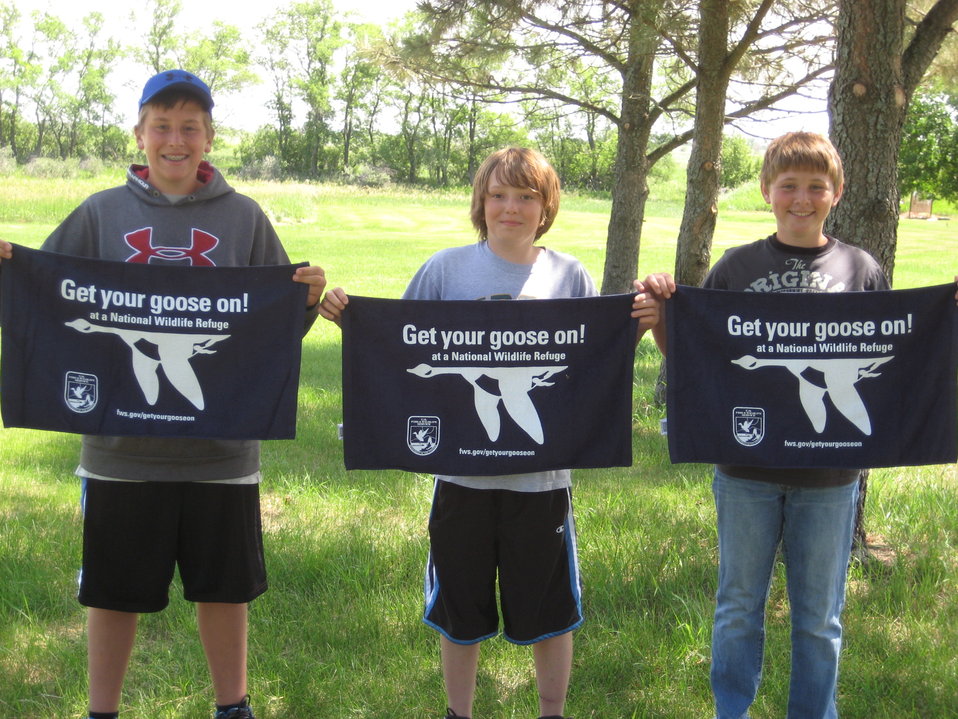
Get Your Goose On!

Taken at Tewaukon National Wildlife Refuge.